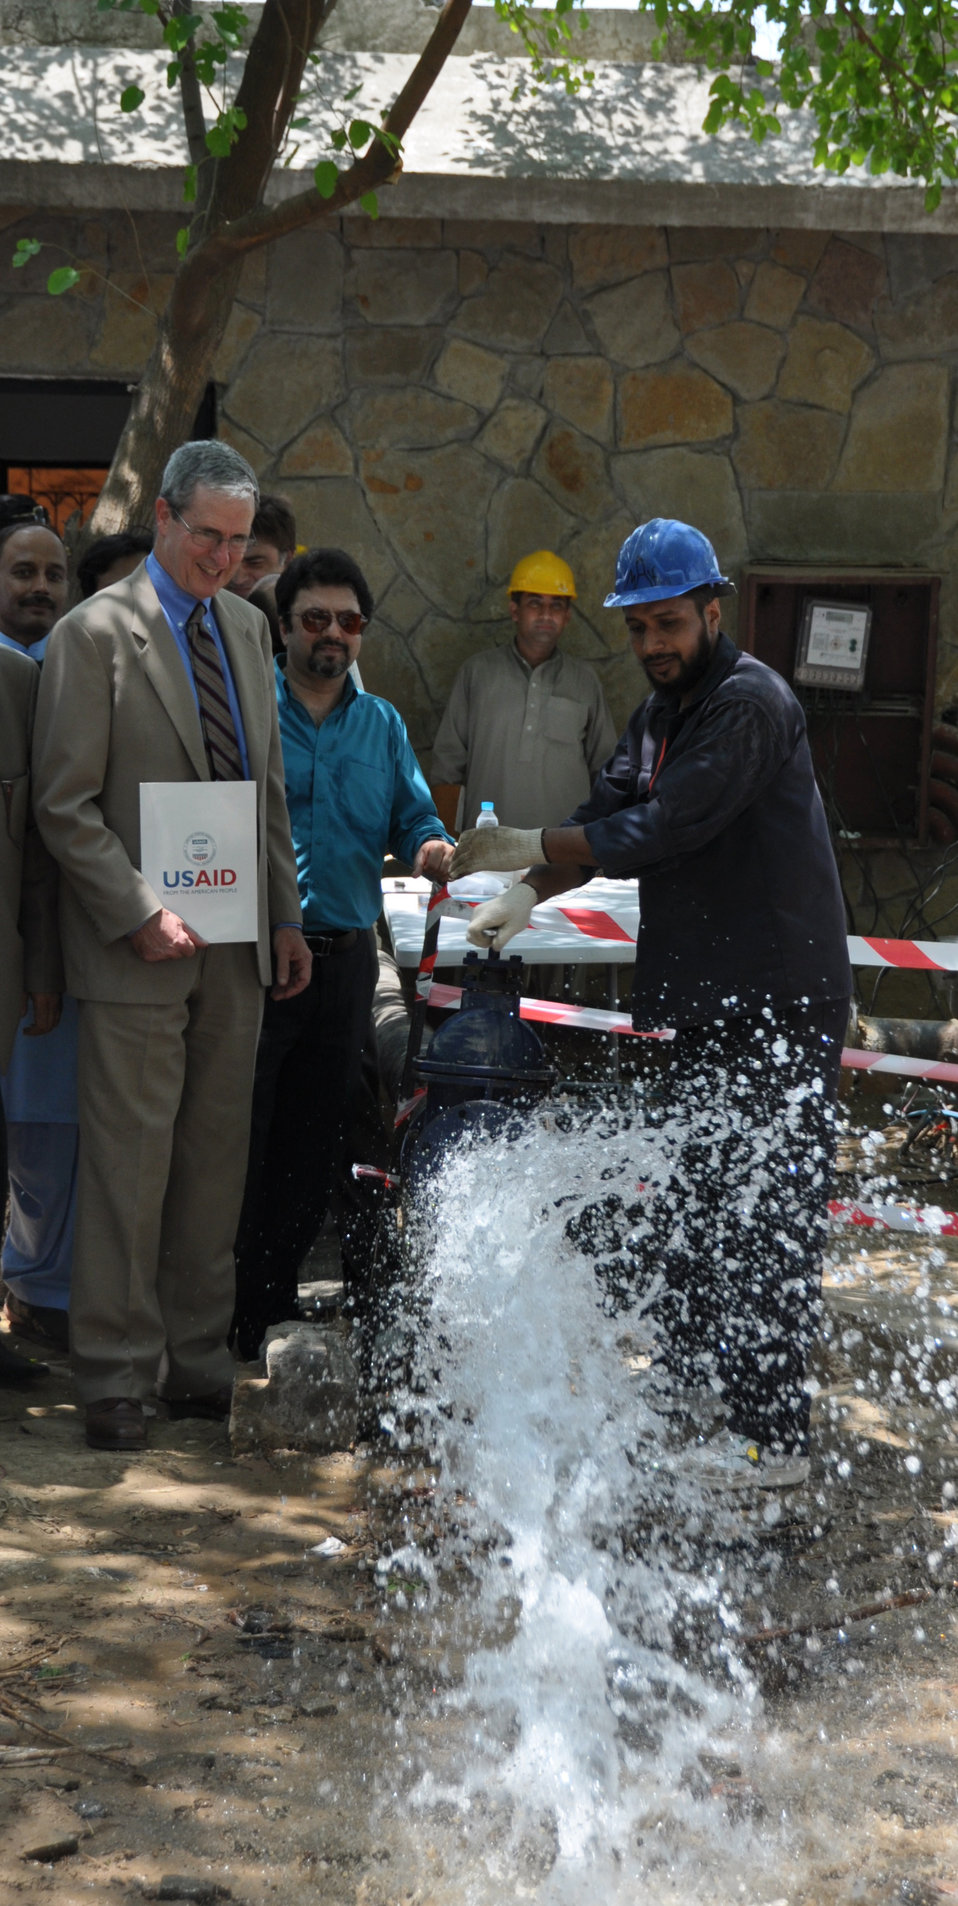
USAID funds replacement of 187 CDA Tubewell Pumps

Islamabad, July 17, 2012 - USAID Country Director Jonathan M. Conly watches as the water comes out of the new USAID-funded energy efficient tubewell pump installed at Fatima Jinnah Park. USAID will replace all 187 tubewell pumps owned by the Capital Development Authority (CDA) in order to improve water supply for Islamabad, reduce energy consumption, and decrease the electricity bills for CDA.